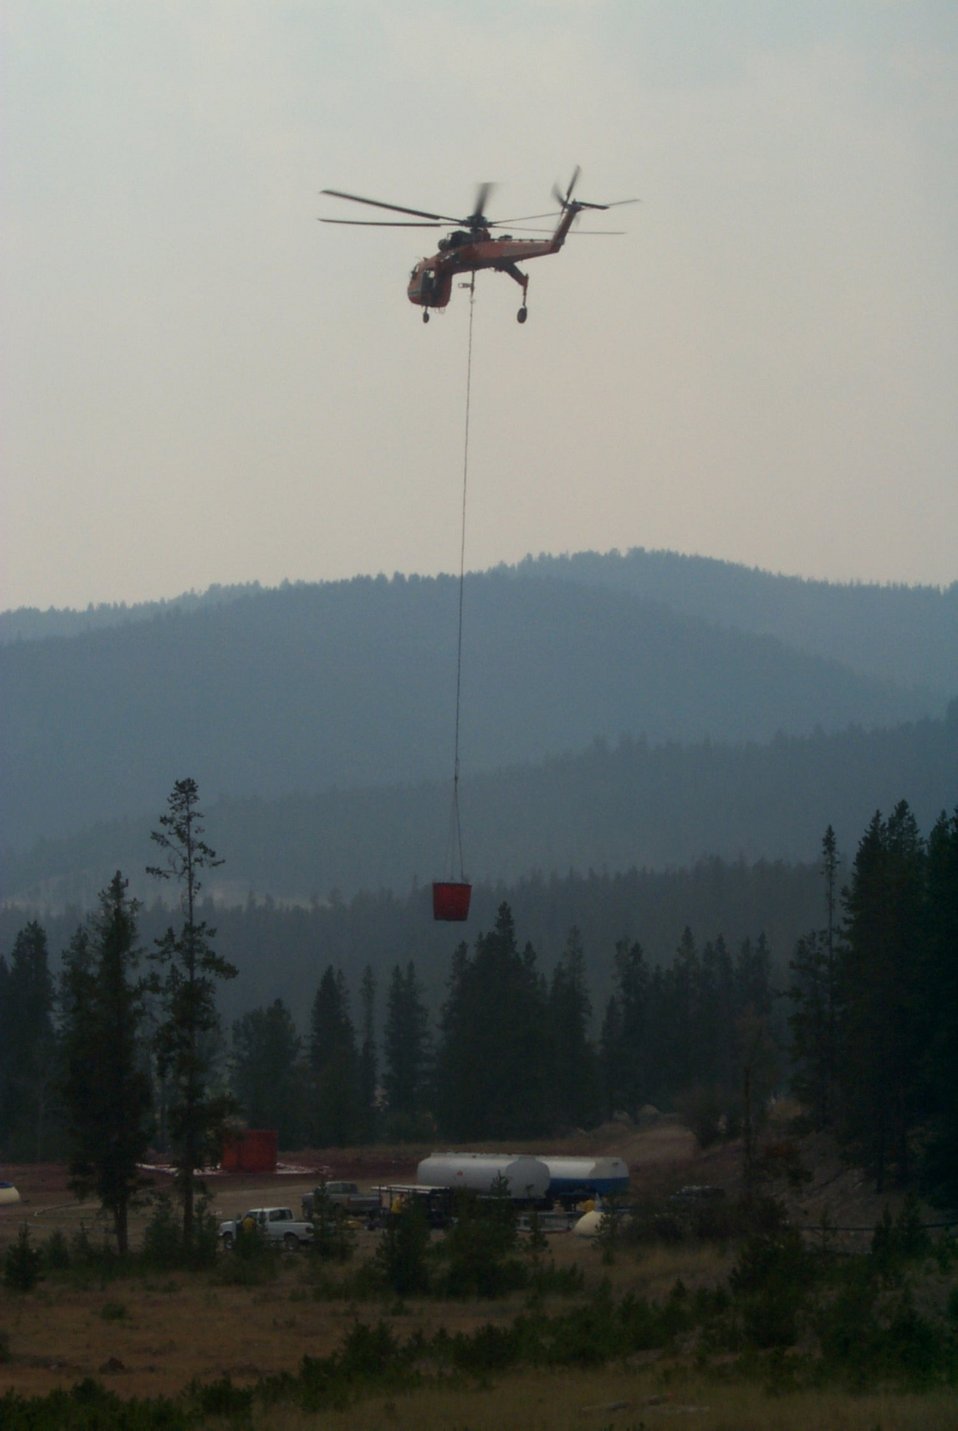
Helicopter drops Fire Clearwater Fire Salmon Field Office USRD Upper Snake River District